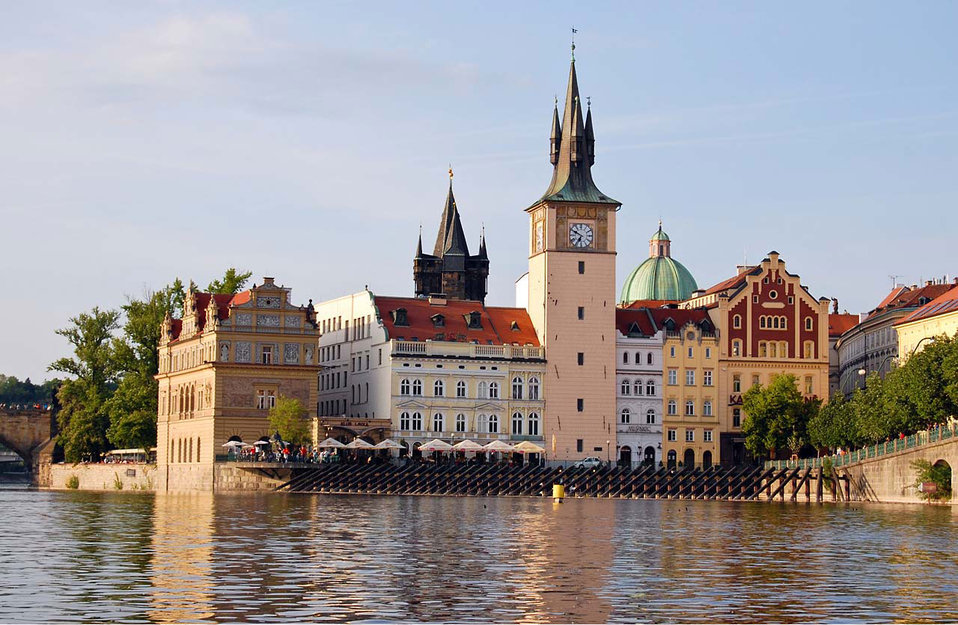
Colour of prague

Tower in prague.